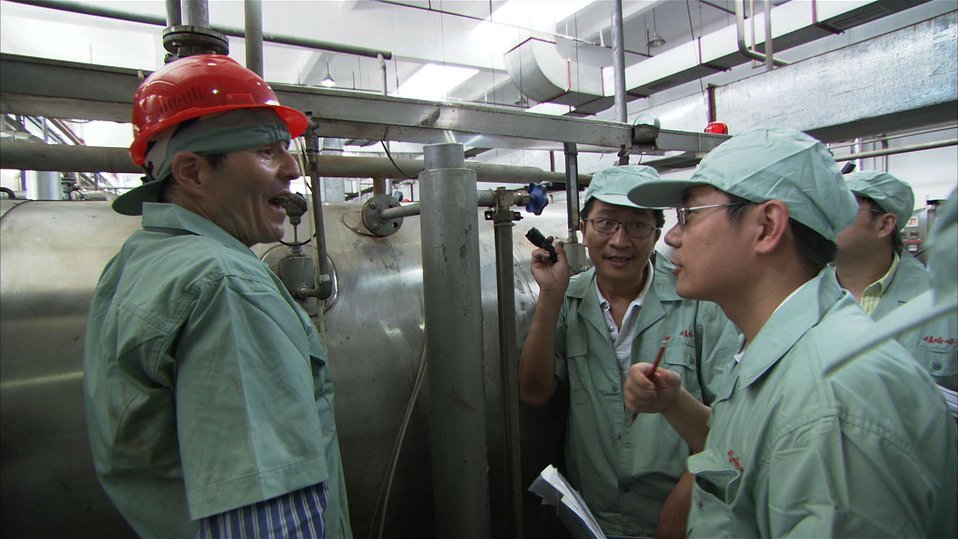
FDA’s China Offices Focus on Product Safety

FDA also trains Chinese regulators and manufacturers on techniques that promote safety. At a workshop in Zhejiang province, FDA’s Daniel Geffin showed Chinese regulators how he inspects equipment used to sterilize canned foods. Read this FDA Consumer Update: www.fda.gov/ForConsumers/ConsumerUpdates/ucm284461.htm

Consumer Updates are a quick and easy way to pick up important health information for you and your family. For a complete list of Consumer Updates see the Consumer Updates photo set: www.flickr.com/photos/fdaphotos/sets/72157624900896241/.

For the latest Consumer Updates go to: www.fda.gov/forconsumers/consumerupdates